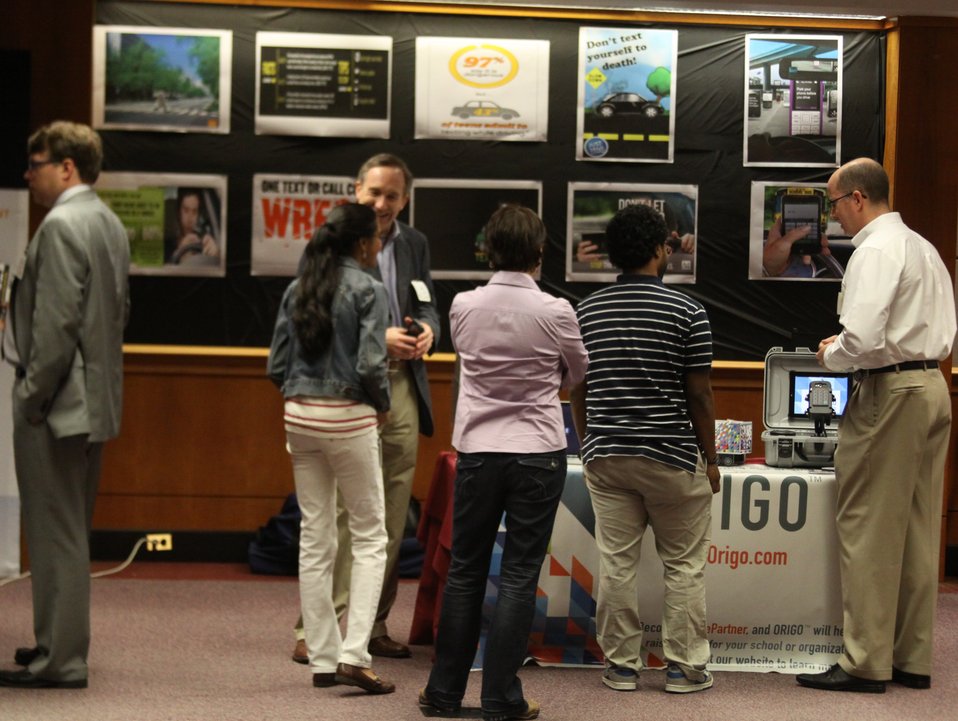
Distracted Driving Technology Showcase April 19, 2013